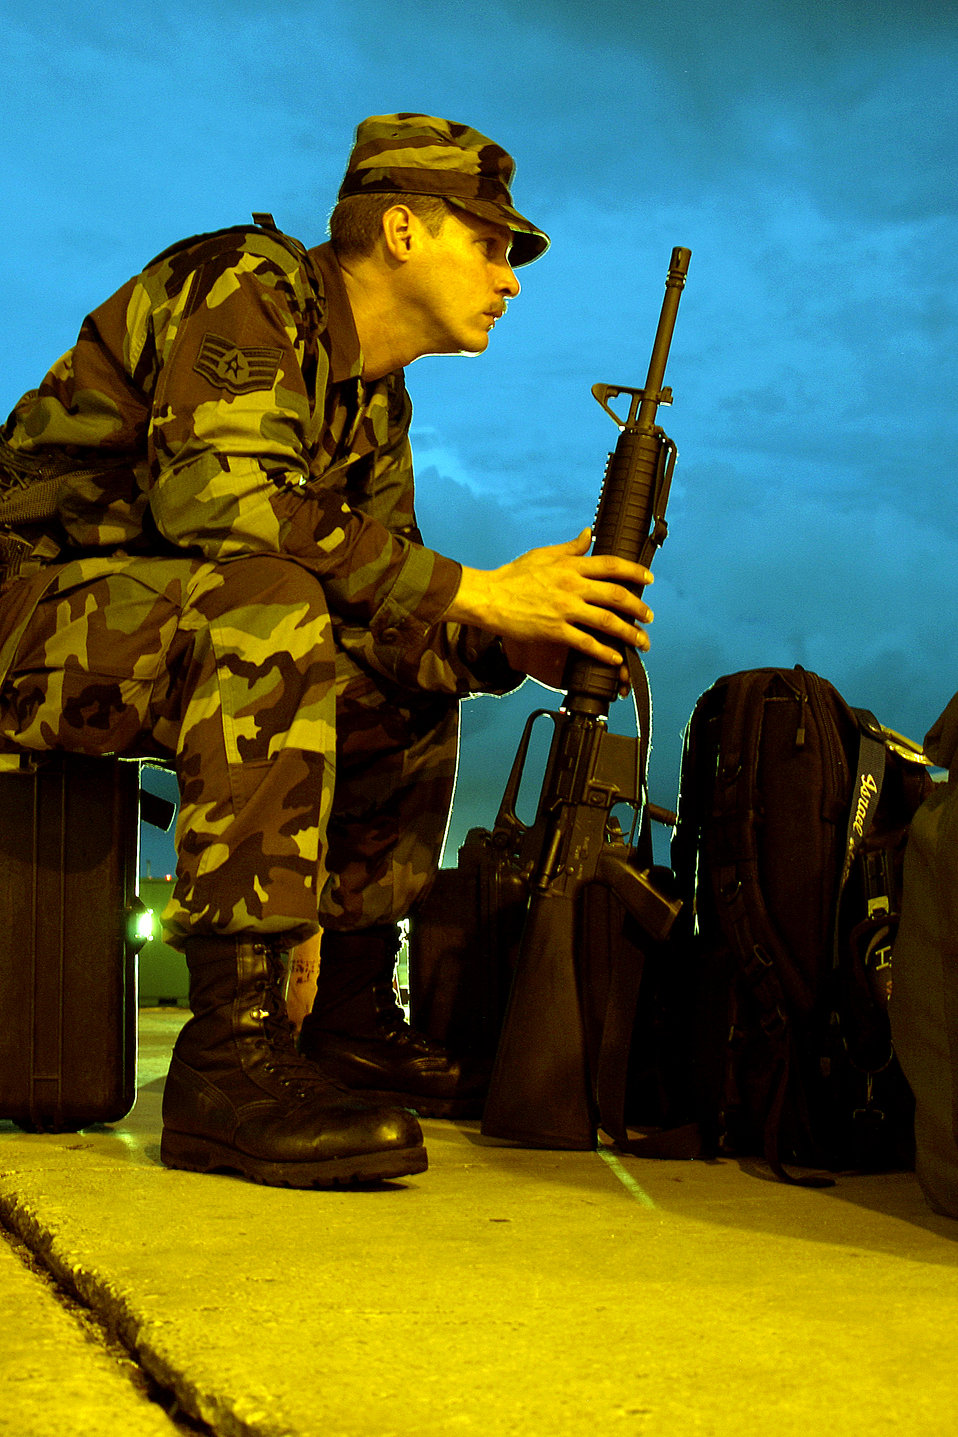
'Beverly' visits Guam

ANDERSEN AIR FORCE BASE, Guam -- Staff Sgt. Israel Soto waits to process for deployment during Exercise Beverly Palm 05-07. The routine exercise is held several times a year to sharpen the mobility and wartime capabilities of participating servicemembers. Sergeant Soto is assigned to Detachment 1, 613th Contigency Response Group.